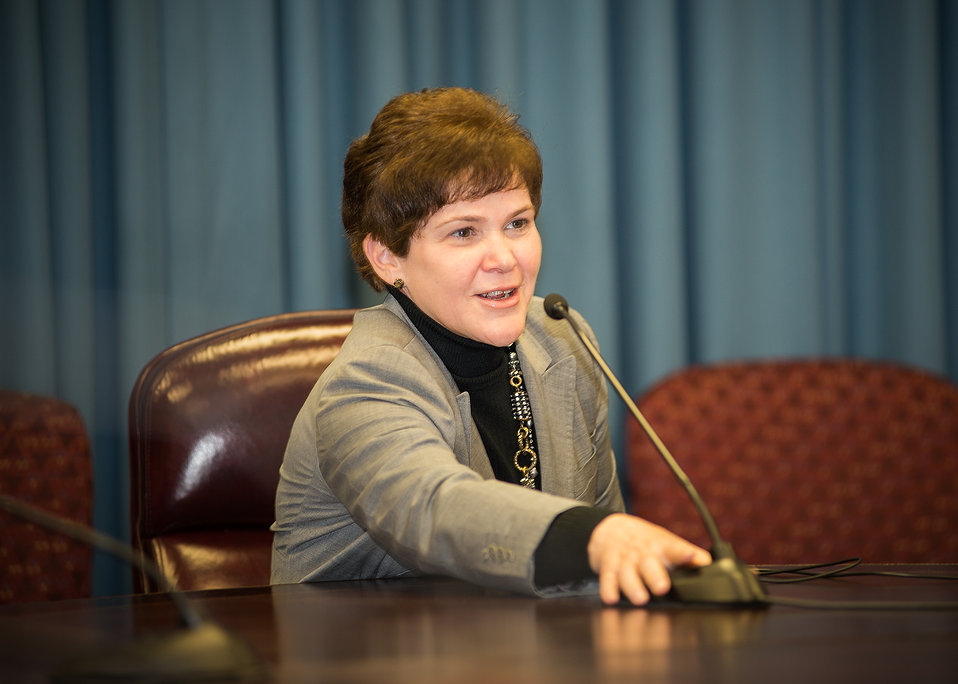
Agriculture Deputy Secretary Krysta Harden speaks to questions posed by students of the Hispanic Association of Colleges and Universities (HACU) National Internship Program Fall 2014 Interns during the Pathways Programs for Students and Recent Graduates to Federal Careers program at the U.S. Department of Agriculture (USDA) on Tuesday, Dec. 3, 2013 in Washington, D.C.